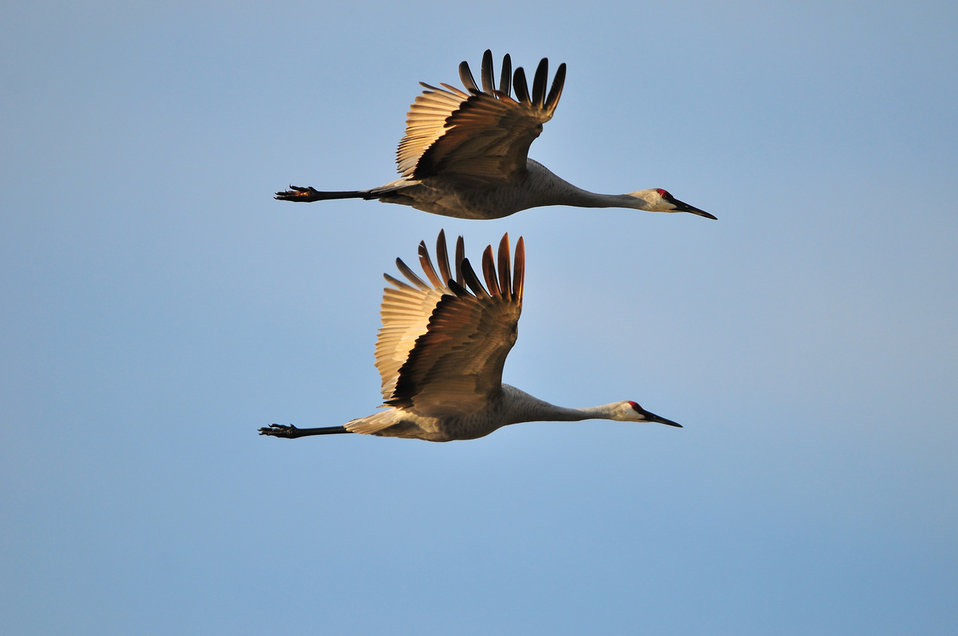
Sandhill Cranes flying over Montezuma National Wildlife Refuge.

Credit' Doug Racine/USFWS